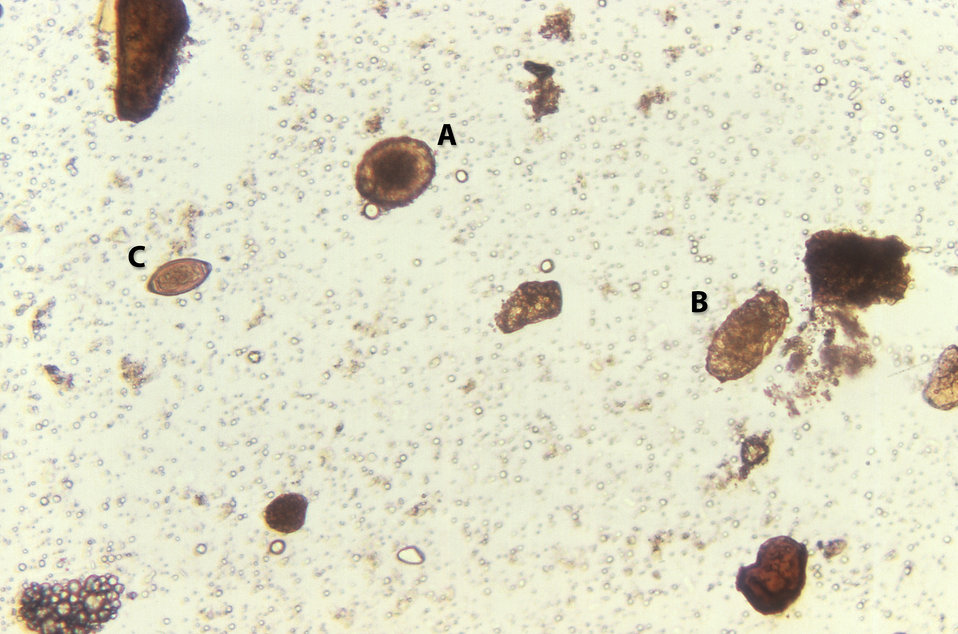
This micrograph reveals both fertilized (A) and unfertilized (B) Ascaris eggs, and a Trichuris egg (C); Mag. 125X.